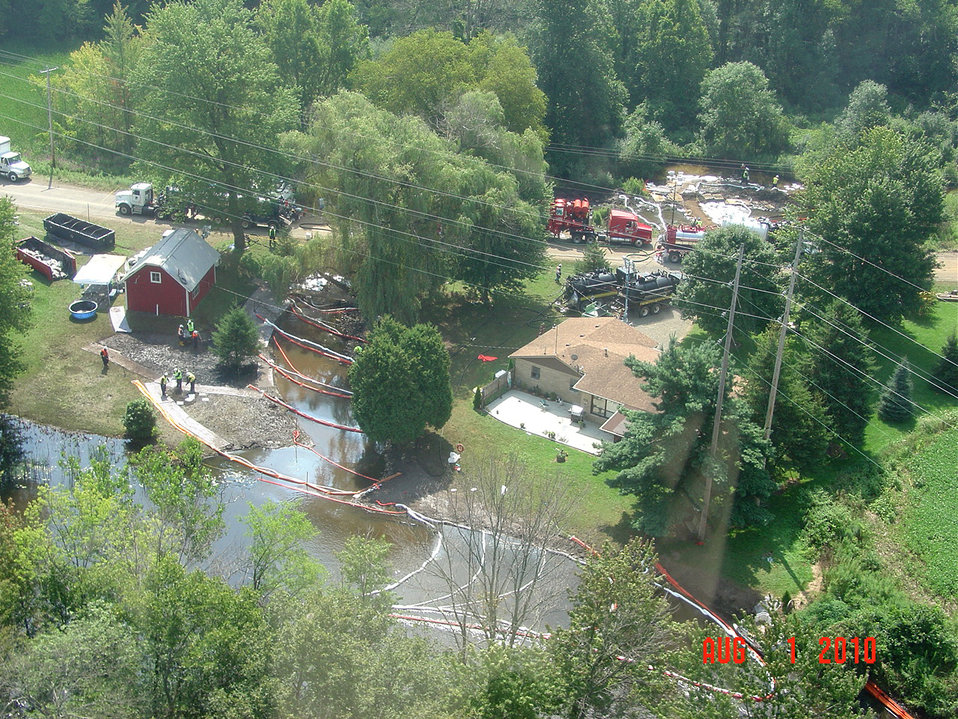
EPA's response to the Enbridge oil spill

August 1, 2010 - Response operations in residential area at confluence of Talmadge Creek and Kalamazoo River.